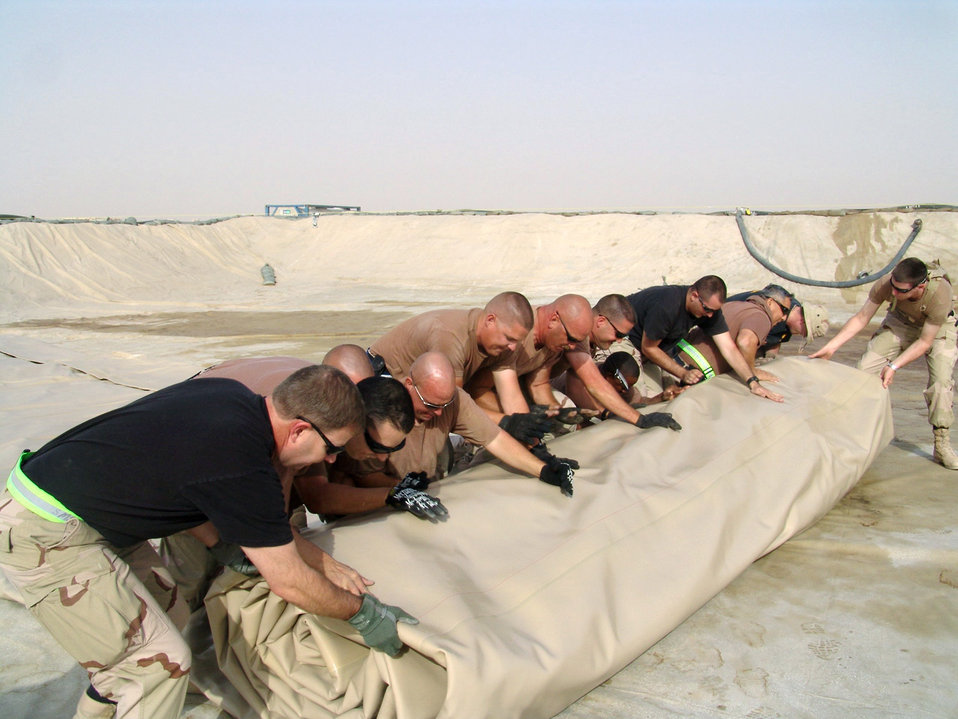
Bladder control

SOUTHWEST ASIA -- Fourteen volunteers help roll out a 210,000-gallon fuel bladder weighing nearly 5,000 pounds at a deployed location here. When filled, the bladder is nearly 100 feet long, 85 feet wide and stands 6 and a half feet tall. The bladder is maintained by the 386th Expeditionary Logistics Fuels Flight which is responsible for fueling both motor vehicles and aircraft at the 386th Air Expeditionary Wing.